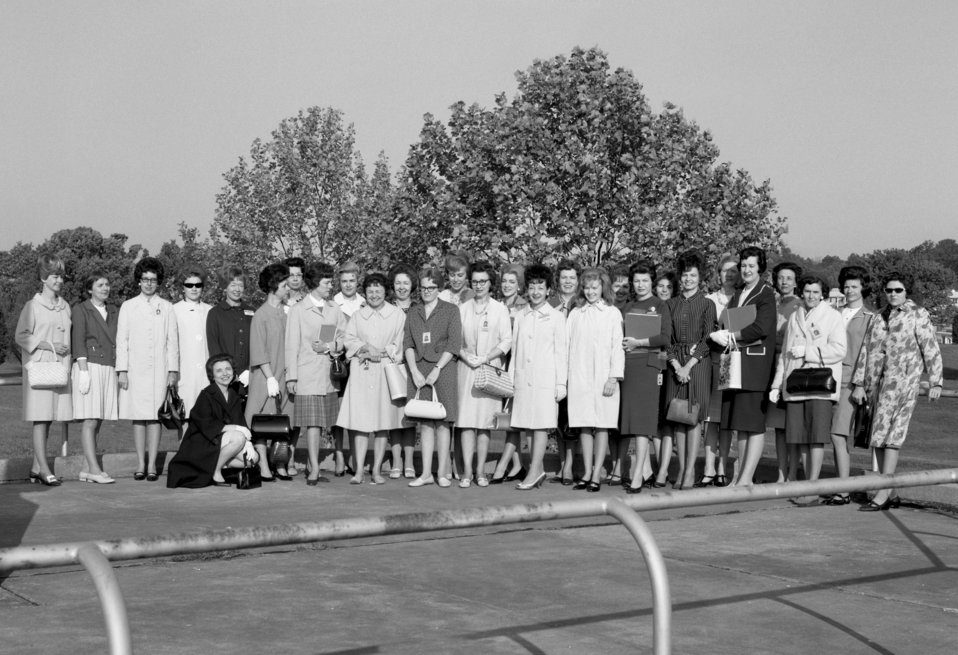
Secretary's Conference Oak Ridge 1967

67-0149 DOE photo Frank Hoffman 5-4-1967 Oak Ridge Tennessee